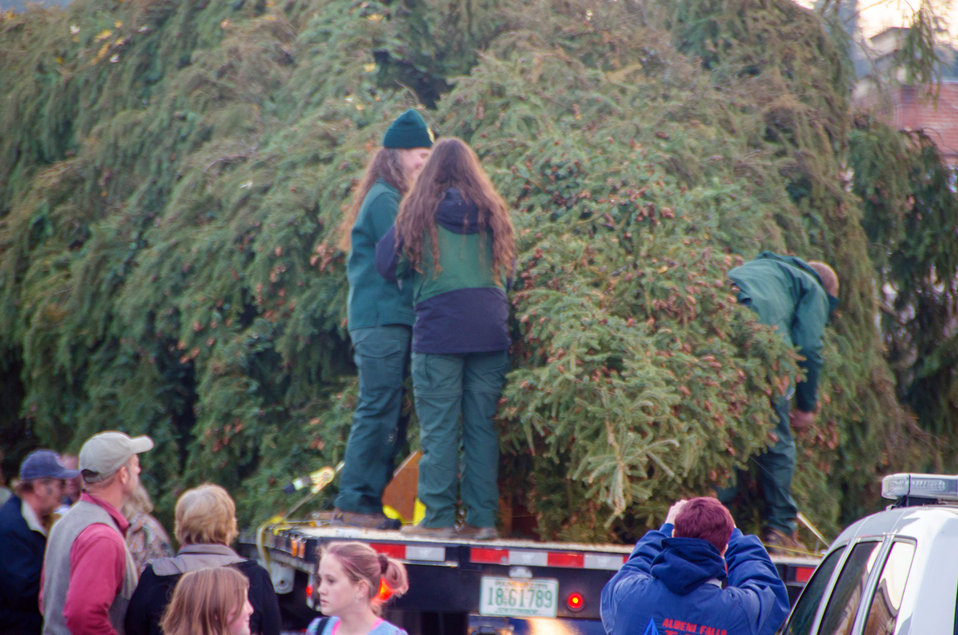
Colville National Forest personnel prepare the official 2013 Capitol Christmas Tree for transport on Nov. 3, 2013. The Capitol Christmas tree is an 88-foot tall Engelmann spruce that was harvested at Colville National Forest in Washington on Nov. 1, 2013.